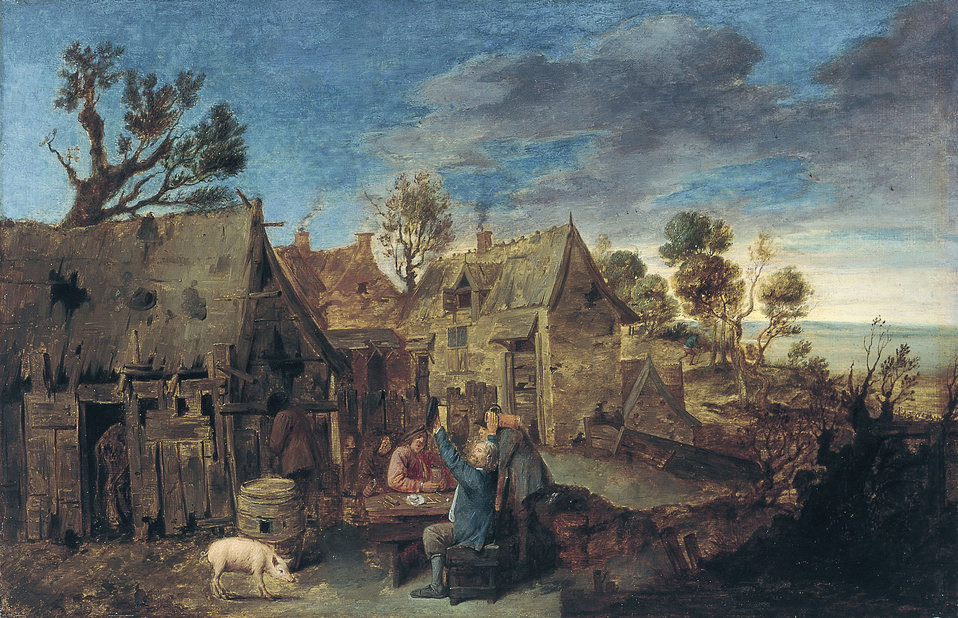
Adriaen Brouwer (Attrib.d to) - Dorp Scene met mannen drinkt